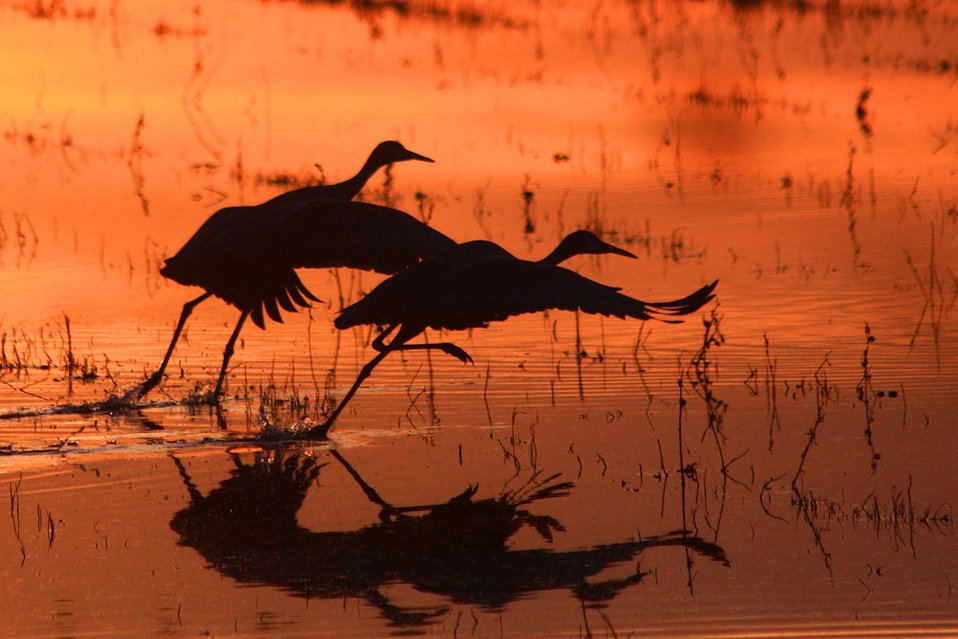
sandhill cranes at Bosque del Apache NWR

Bosque del Apache National Wildlife Refuge, NM
Festival of the Cranes
Nov. 13, 2011
Photo: Marvin De Jong, USFWS volunteer